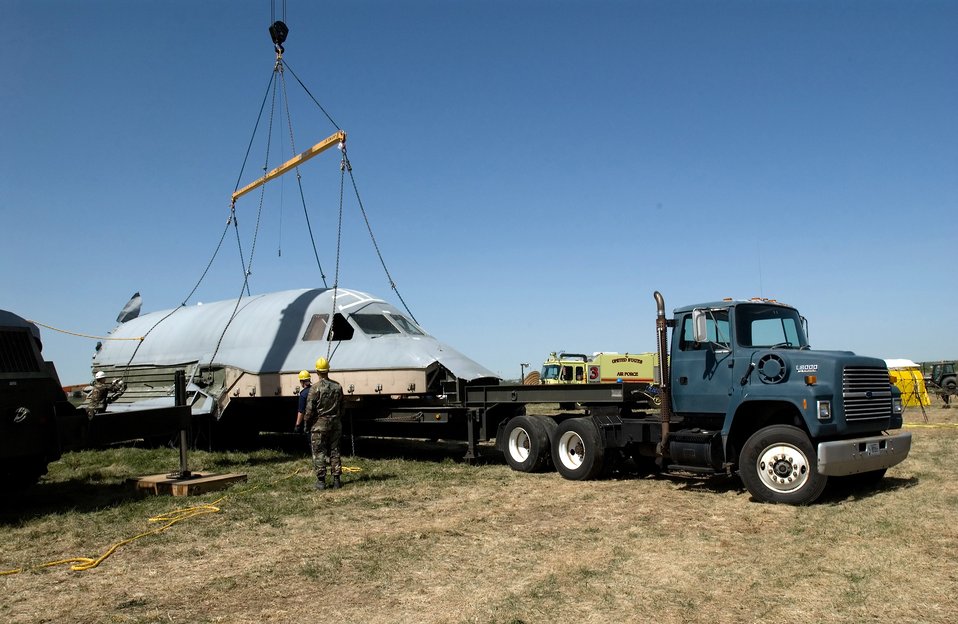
C-5 recovery efforts continue at Dover

The crew compartment of the C-5 Galaxy that crashed at Dover Air Force Base, Del., April 3, is placed on a flatbed truck on Thursday, April 20, 2006. The compartment, once it is released by the accident investigation board, is expected to be used as a training simulator.